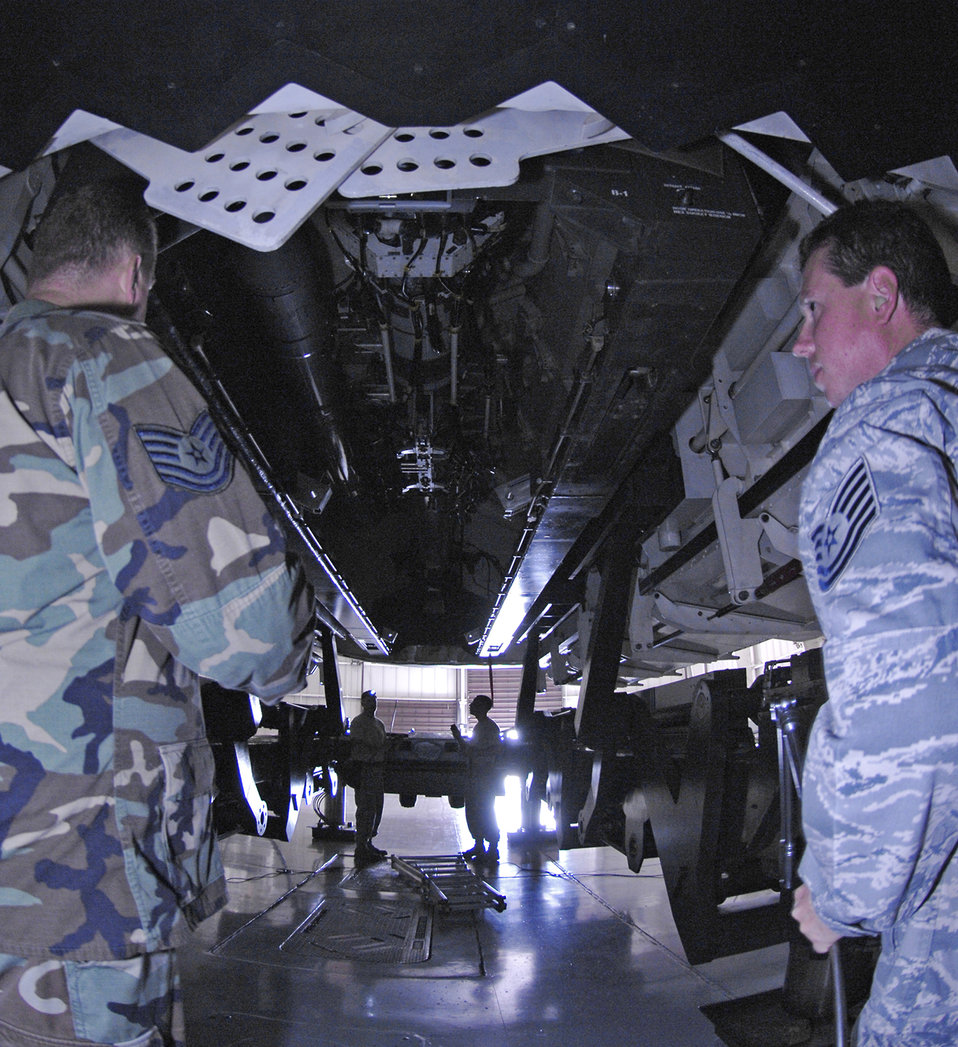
Aligned correctly...

Tech. Sgts Robert Kirkham (left) and Cary Cook watch as Airmen adjust the weapons trailer into position under a B-2 Spirit Aug. 14 at Whiteman Air Force Base, Mo. Sergeant Cook is loading standardization crew team chief, and Sergeant Kirkham is a loading standardization crew member.